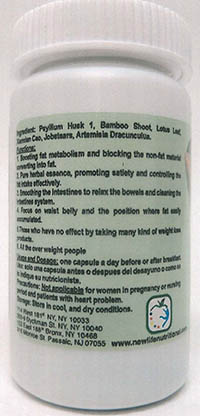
RECALLED – Dietary Supplement

March 25, 2014 – Product Recall – New Life Nutritional Center Issues Voluntary Nationwide Recall of Super Fat Burner, Maxi Gold and Esmeralda Dietary Supplements Due to the Presence of Undeclared Sibutramine and Phenolphthalein.